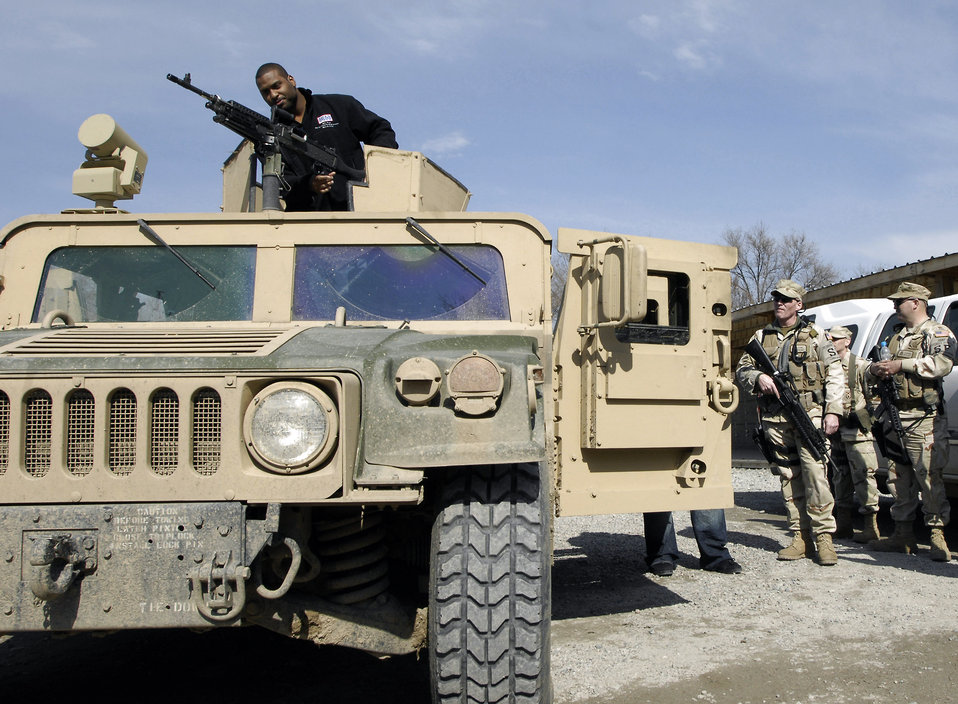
NFL players kick off USO tour in Kyrgyzstan

Carolina Panthers Mike Rucker checks out a M-240B machine gun on a 376th Expeditionary Security Forces Squadron Humvee March 4 at Manas Air Base, Kyrgyzstan. Mr. Rucker, Chicago Bears Tommie Harris, San Diego Chargers Luis Castillo and Sports Illustrated writer Peter King visited Airmen at the base as part of the United Service Organizations NFL Tour to show support of operations in Afghanistan .